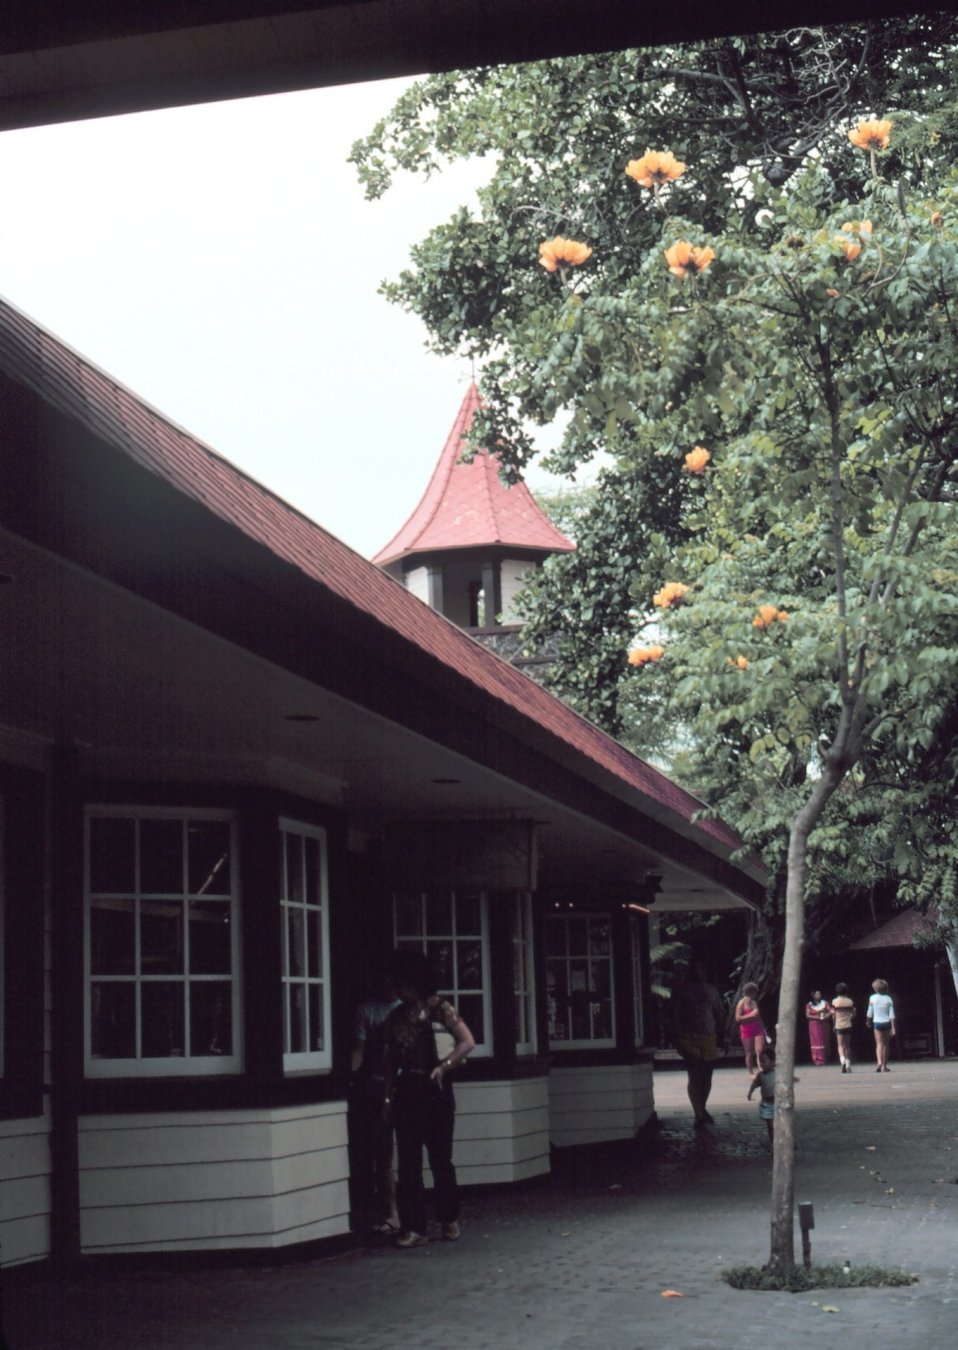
A scene in the town of Kona